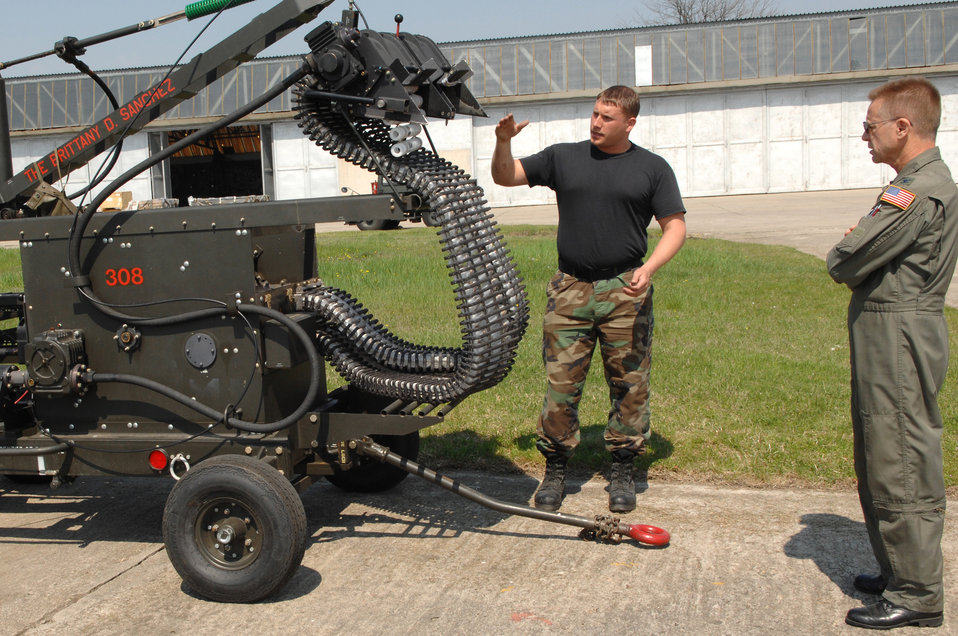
A-10 pilots take to Bulgarian skies during joint

Tech. Sgt. Jeremy Watson demonstrates A-10 Thunderbolt II armament equipment to Col. Pete Maynard April 17 at Bezmer Air Base, Bulgaria. Sergeant Watson is an armament systems technician with athe 52nd Equipment Maintenance Squadron at Spangdahlem Air Base, Germany, and Colonel Maynard is the Bulgarian defense attache.